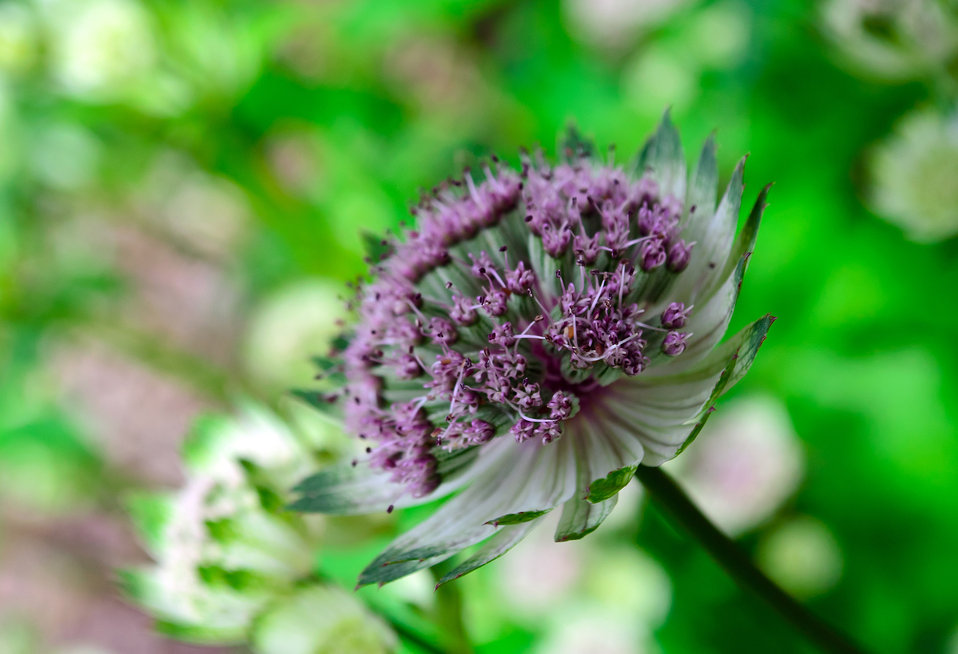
Nice flower.